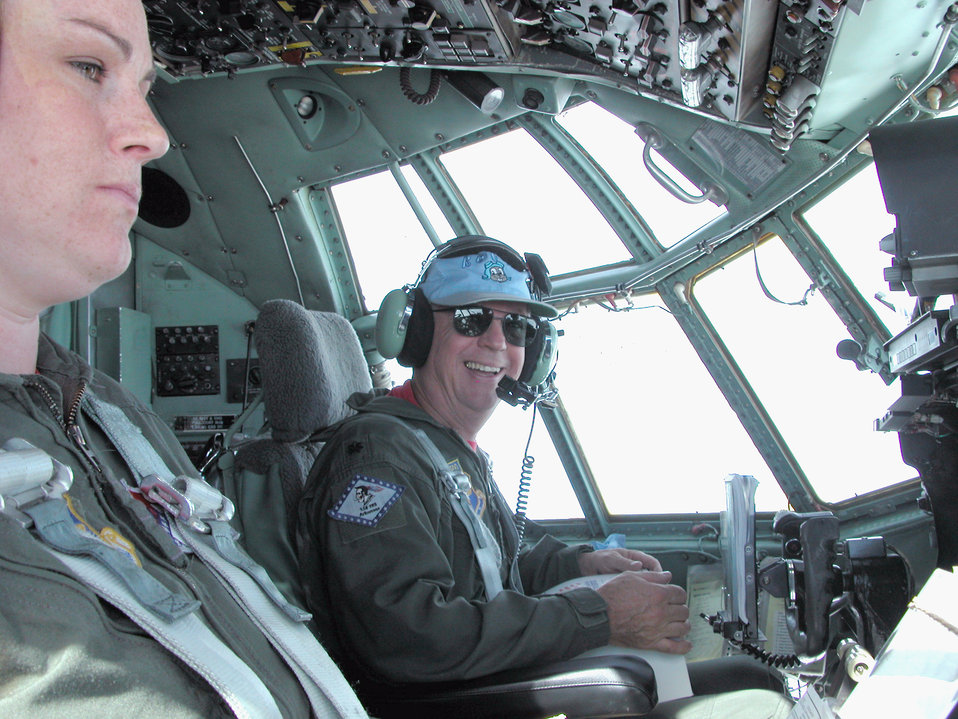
Fini-flight

LITTLE ROCK AIR FORCE BASE, Ark. -- Lt. Col. Larry Hill, a 154th Training Squadron pilot, is all smiles as he flies a C-130 Hercules for the final time in his 34-year career Oct. 28. The colonel and his twin daughters -- Capts. Elissa Granderson and Leslie Hill -- flew his final flight together. Leslie was in the co-pilot seat with him for the first half of the two-hour flight.